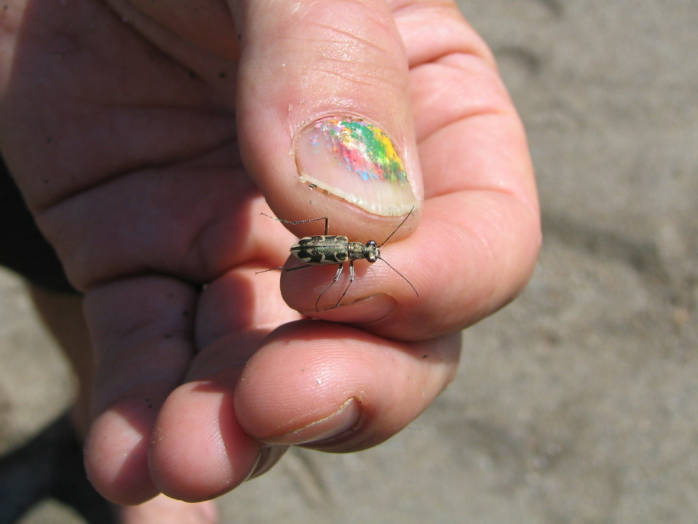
Puritan Tiger Beetle